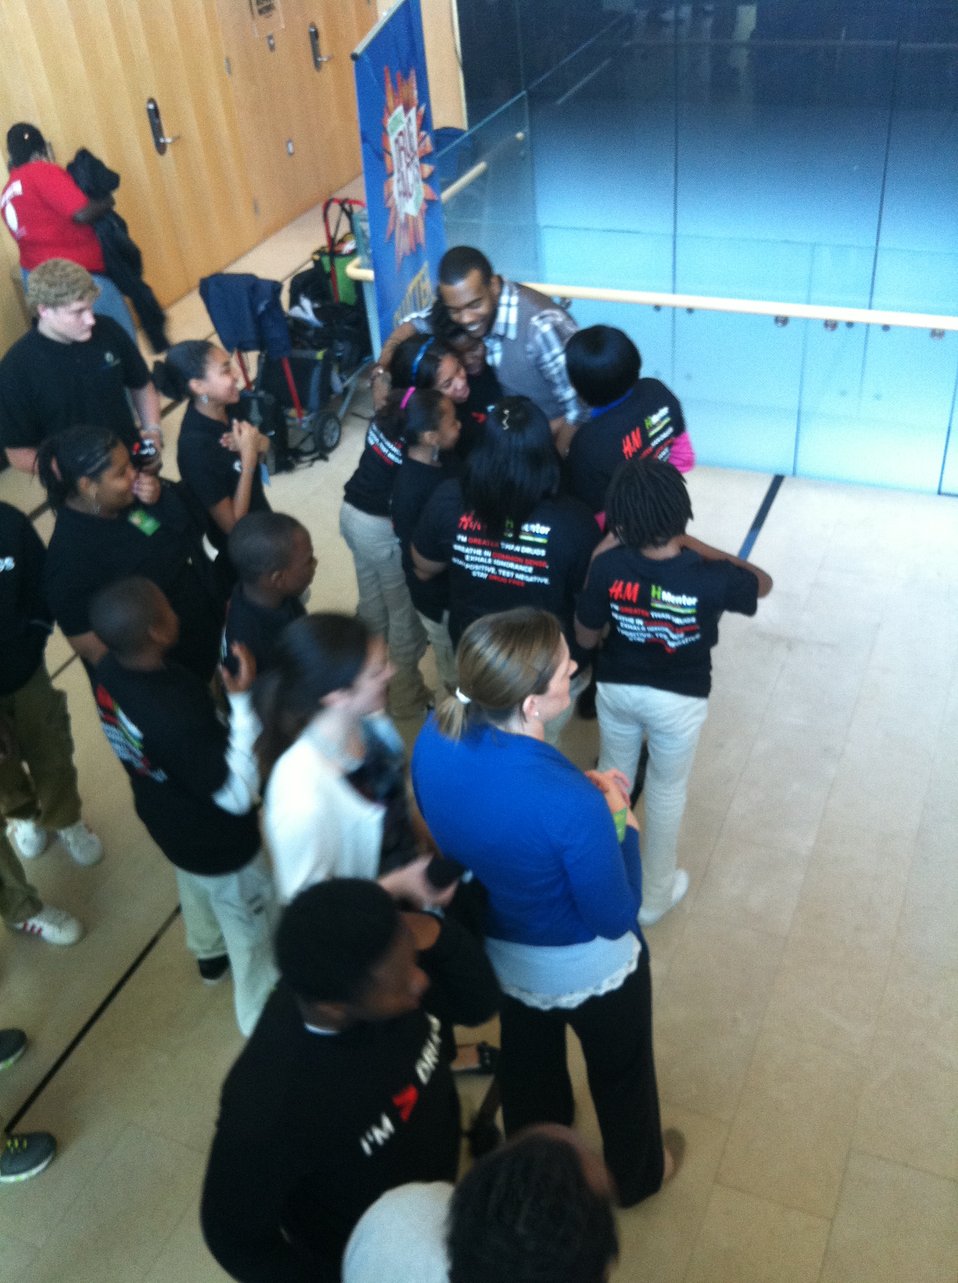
Mentor 16